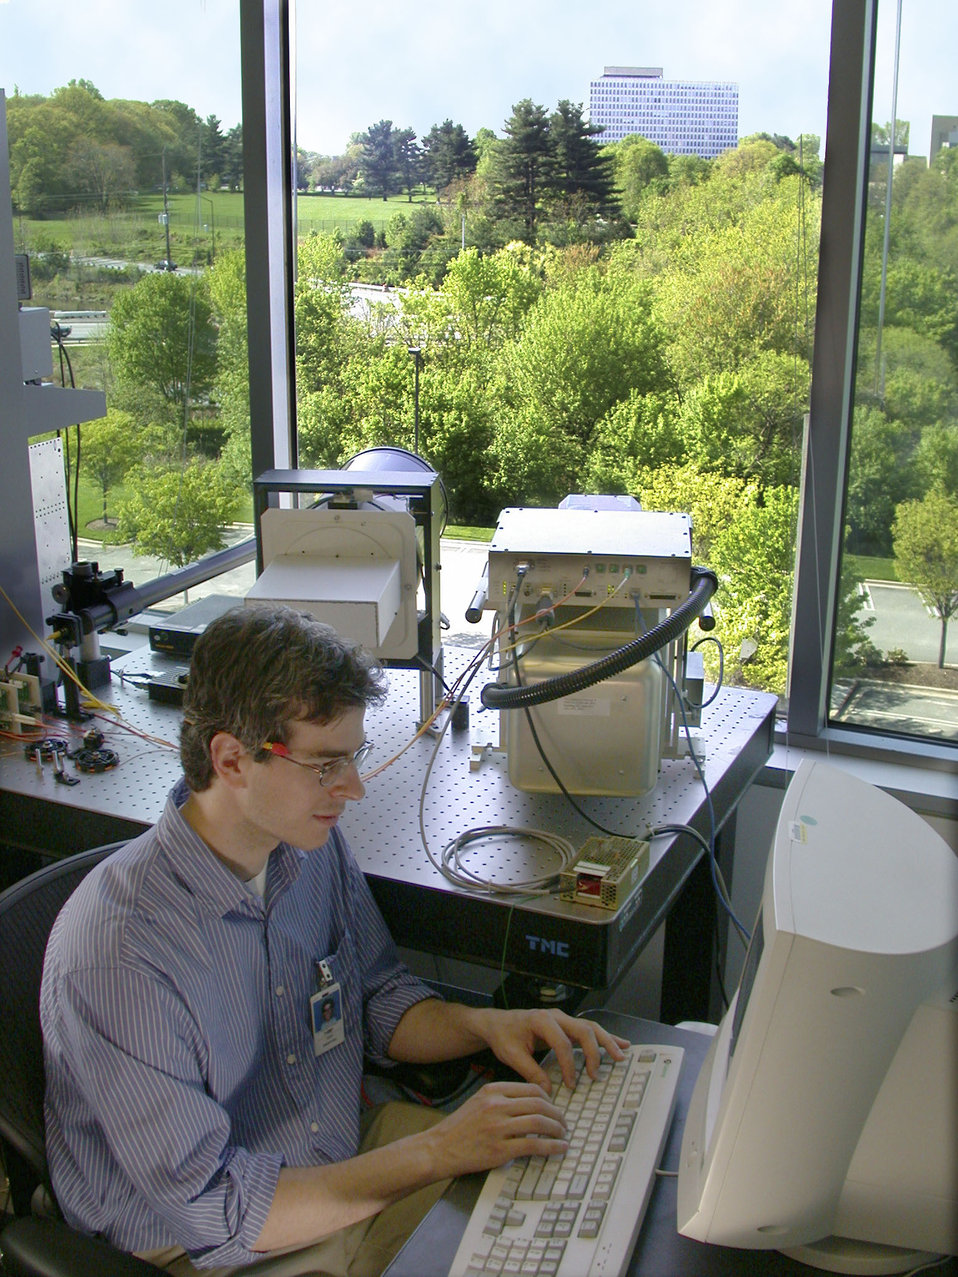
Physicist Joshua Bienfang sets up the NIST quantum key distribution system to receive a string of photons from colleagues stationed on the top floor of the NIST Administration Building (shown in the background.) The black instrument on the left is an 8-inch telescope used in collecting the incoming photons.